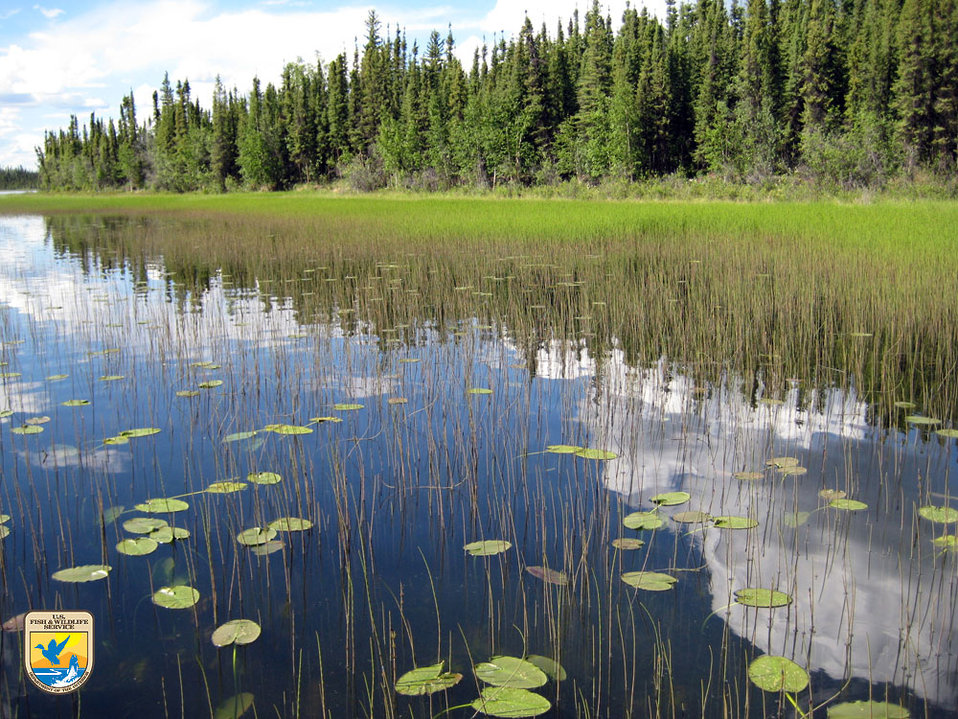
Deadman Lake - Region 7

Deadman Lake in Alaska